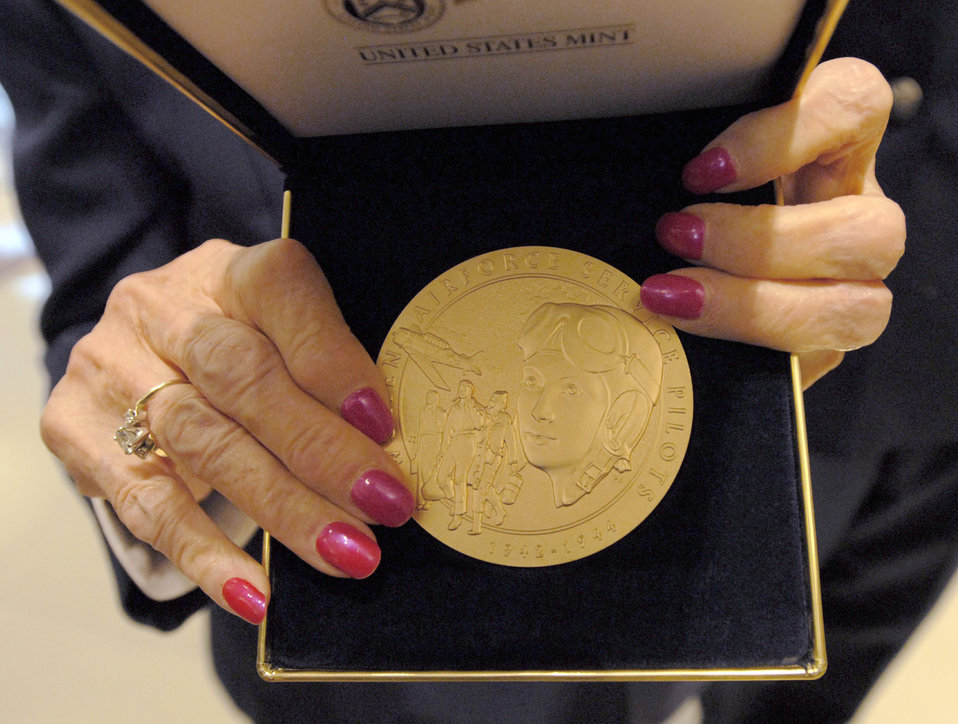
WASPs awarded Congressional Gold Medal

Betty Wall Strohfus, a Women Airforce Service Pilot from Minnesota, displays her copy of the Congressional Gold Medal at the Capitol March 10, 2010. More than 200 WASPs attended the event, many of them wearing their World War II-era uniforms. The audience, which Speaker Nancy Pelosi noted was one of the largest ever in the Capitol and too large to fit into Emancipation Hall, also included their families, as well as the families of those who have since died or couldn't travel.